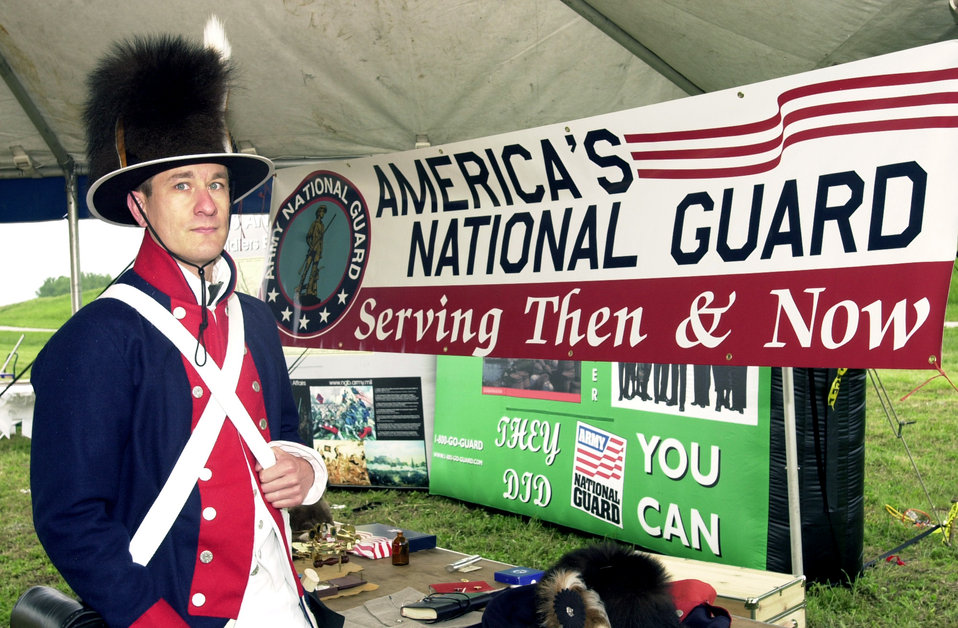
Guard Airman participates in Lewis and Clark bicentennial

HARTFORD, Ill -- Tech. Sgt. Al Garver portrays an early 19th century Soldier during the bicentennial celebration of the Lewis and Clark Expedition. He is assigned to the Montana Air National Guard.